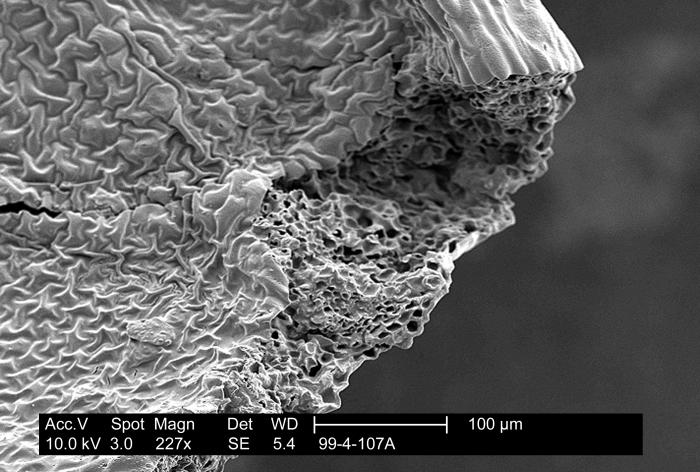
This scanning electron micrograph (SEM) reveals the highly textured surface of a parsley leaf on which bacteria can hide.